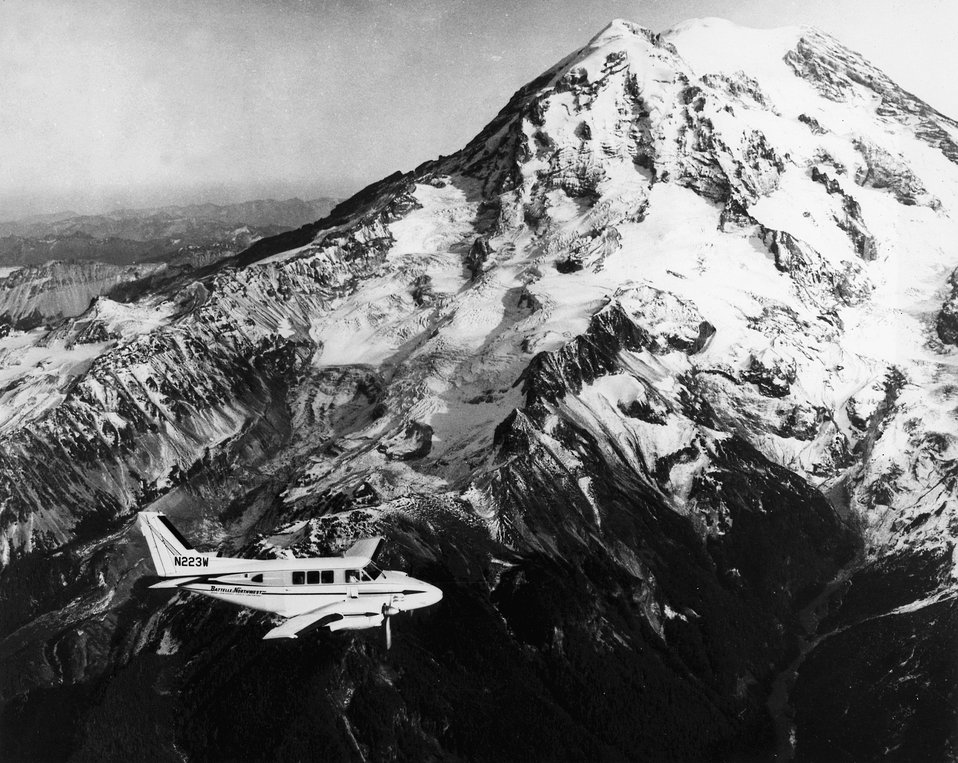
A serial atmospheric physics laboratory cruises near Mount Rainier collecting atmospheric samples which will be analyzed to determine the dispersion of a tracer material in the atmosphere. c. 1970